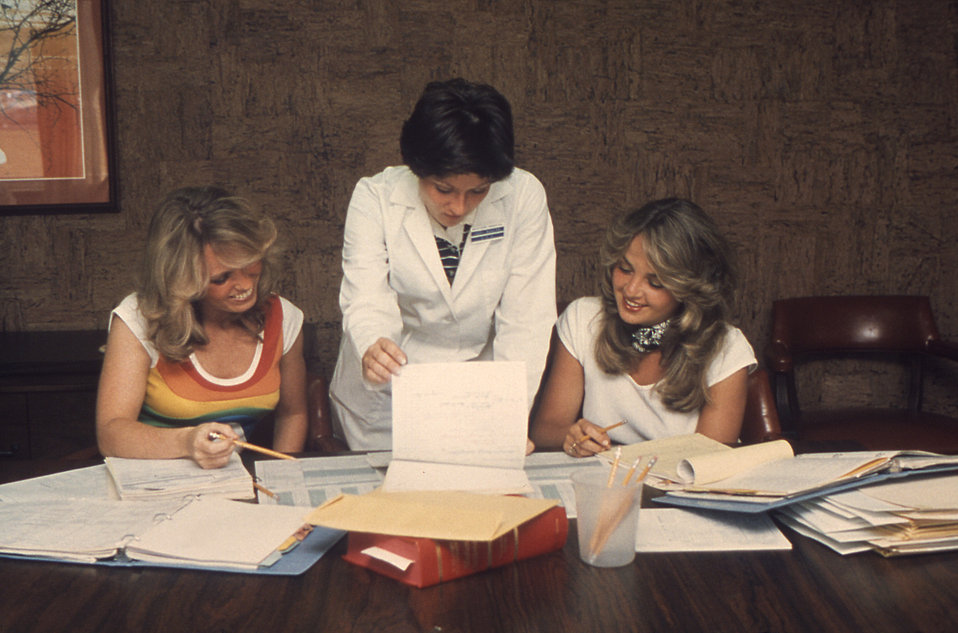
This historic image depicted a Centers for Disease Control (CDC) public health adviser working with two hospital healthcare administrative personnel in a hospital setting, related to a pilot study known as SENIC (Study on the Efficacy of Nosocomial Infection Control), which measured the accuracy of a system, designed by Robert W. Haley, M.D., that detected hospital-acquired infections through the analysis of medical records. SENIC was ultimately used to measure the change of infection rates in a random sample of U.S. hospitals. In this picture the advisor appeared to be describing to the two women the protocols associated with an in-line quality control analysis that compares the duplicate reviews of the same medical records, in order to detect discrepancies.